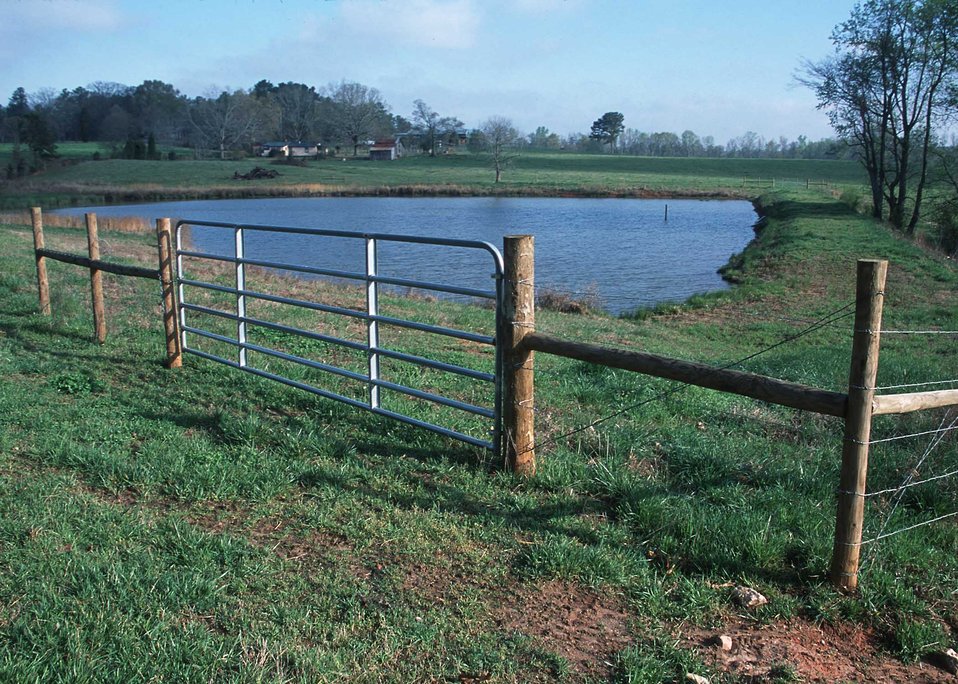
Wetland area restored and buffer protection from grazing livestock. Lyons, Georgia.